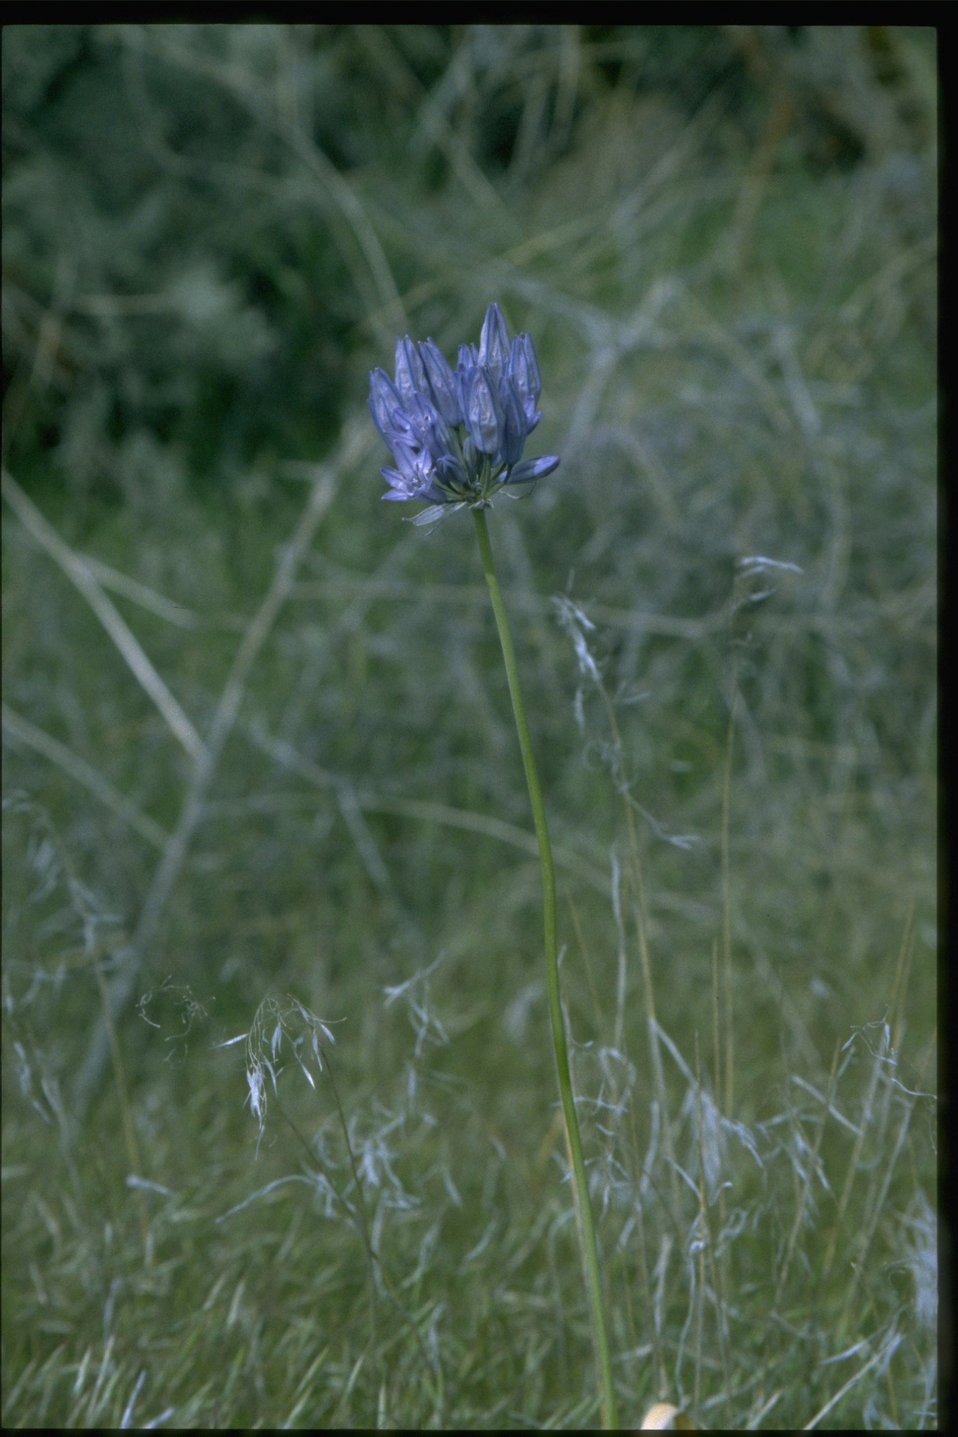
Medium shot of Douglas' Triteleia wildflower.